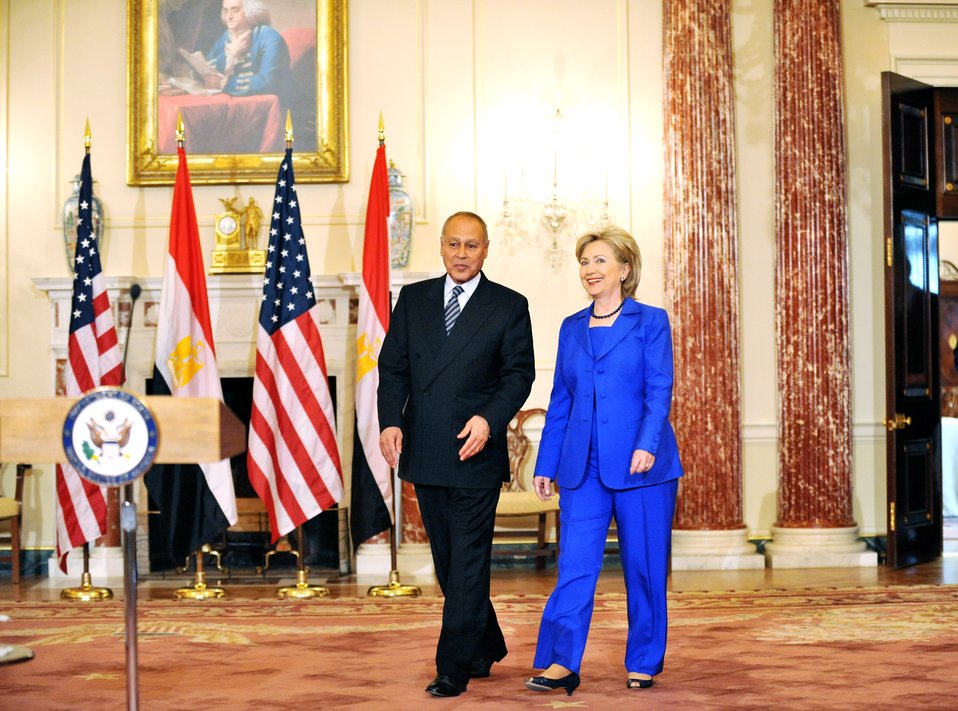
Secretary Clinton Meets With Egyptian Foreign Minister

U.S. Secretary of State Hillary Rodham Clinton hosts a bilateral meeting with Egyptian Foreign Minister Ahmed Ali Aboul Gheit at the U.S. Department of State in Washington, DC May 27, 2009.